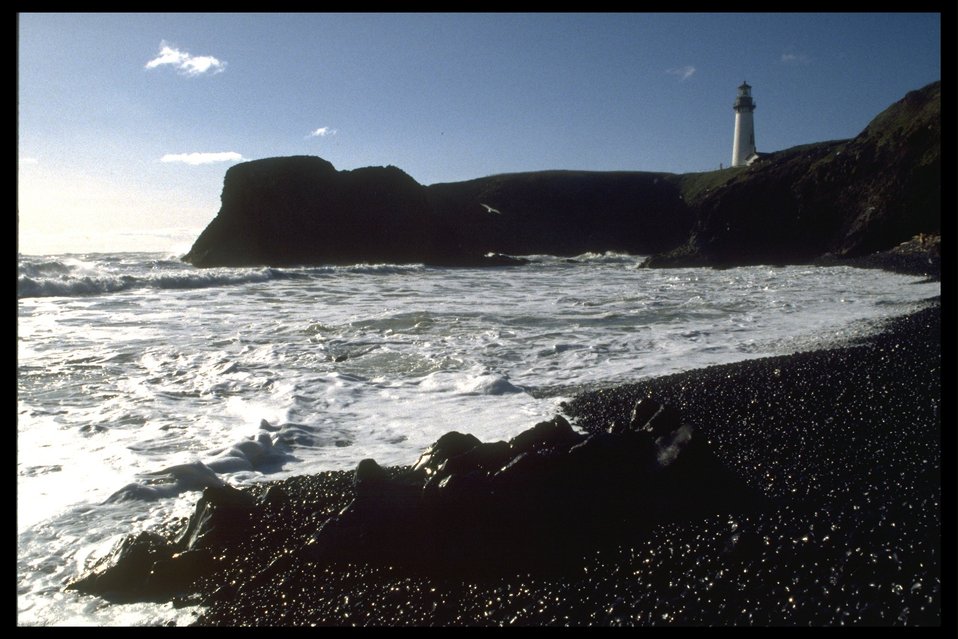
Yaquina Head Lighthouse.